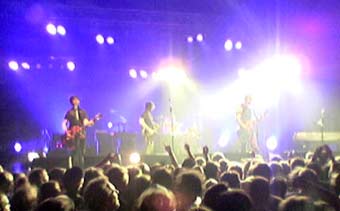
United States rock band Queens of the Stone Age, Live in Berlin (Columbiahalle). Front left to right: Troy Van Leeuwen, Alain Johannes, Josh Homme (Natasha Shneider was not on stage during that song, yet her keyboard is visible at the right)